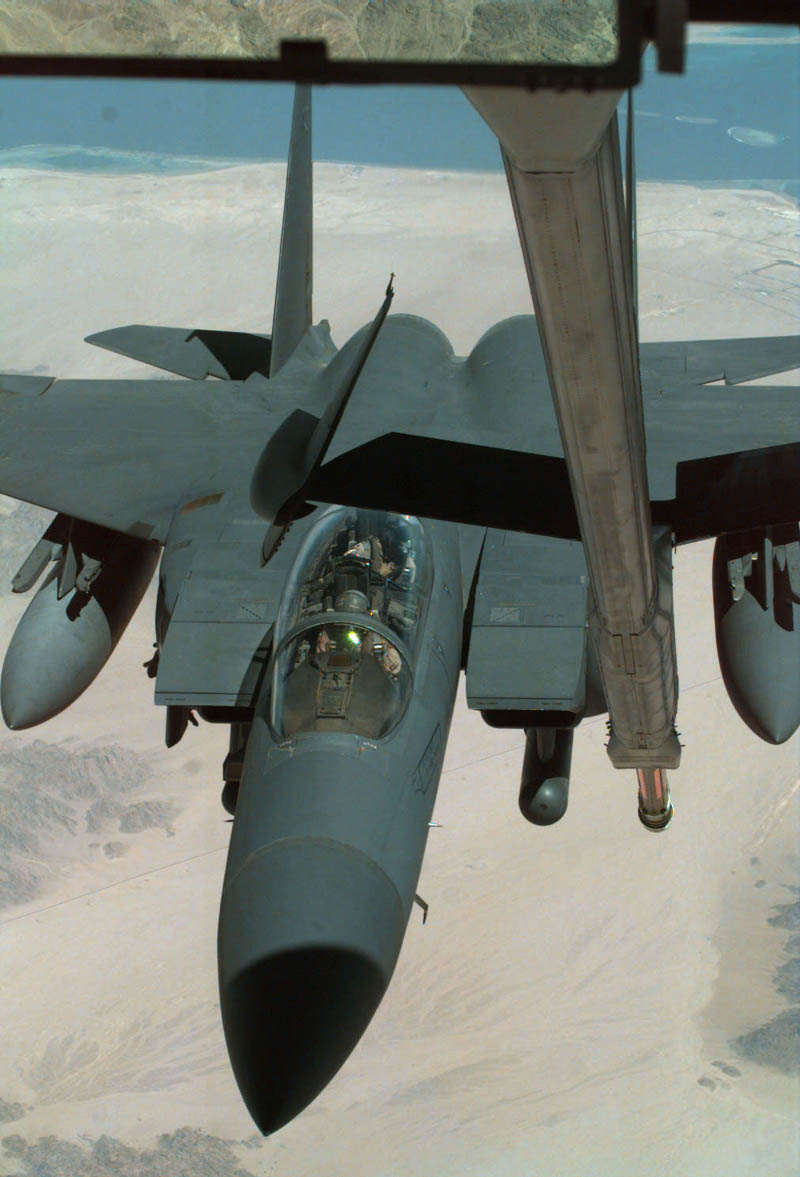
Fuel for the return trip

OPERATION SOUTHERN WATCH -- An F-15E Strike Eagle from the 336th Fighter Wing, Seymour Johnson Air Force Base, N.C., is refueled over Egypt by a KC-10A Extender, 6th Air Refueling Squadron, 60th Air Mobility Wing, Travis AFB, Calif. A total of eighteen F-15Es are returning home to Seymour Johnson after completing a 45 day TDY rotation in the middle east in support of operation Southern Watch.